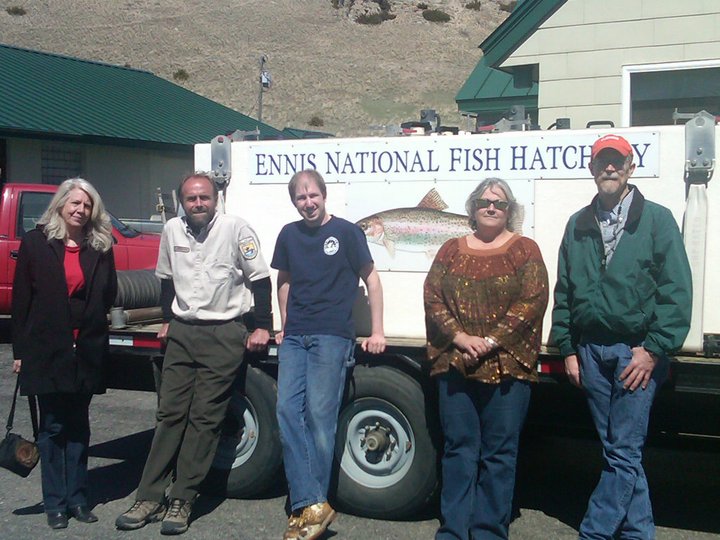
Staff at Ennis National Fish Hatchery

Sharon Rose (ARD Fisheries), Sean Henderson, a summer volunteer, Connie Keeler-Foster (Project Leader at Ennis), and Gibson Gaylord rest after a tour of Ennis National Fish Hatchery. The hatchery produces millions of rainbow trout eggs annually for research facilities, universities, and other hatcheries in 23 different states.